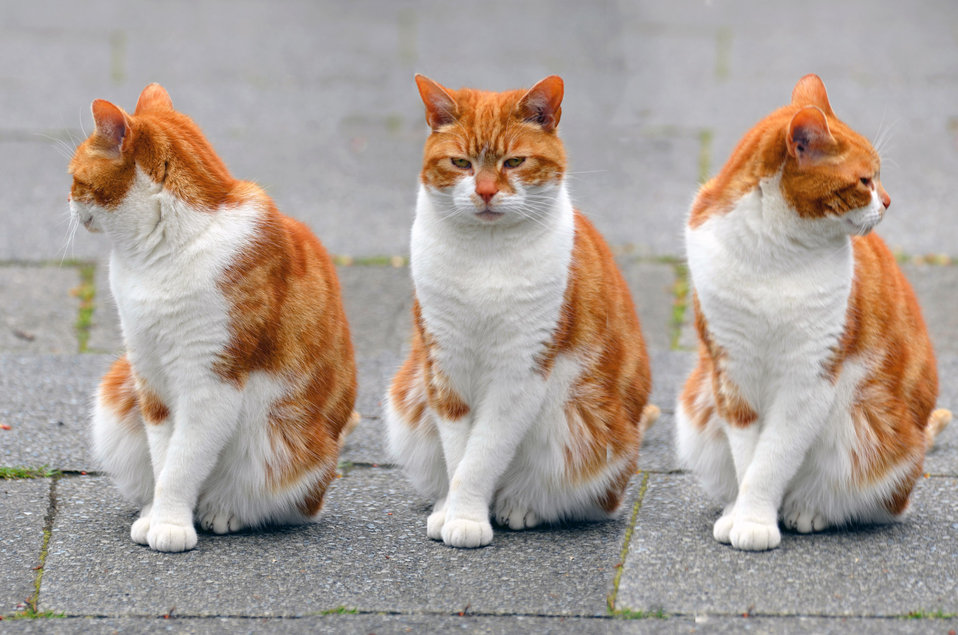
Cat

Cats - patrol.